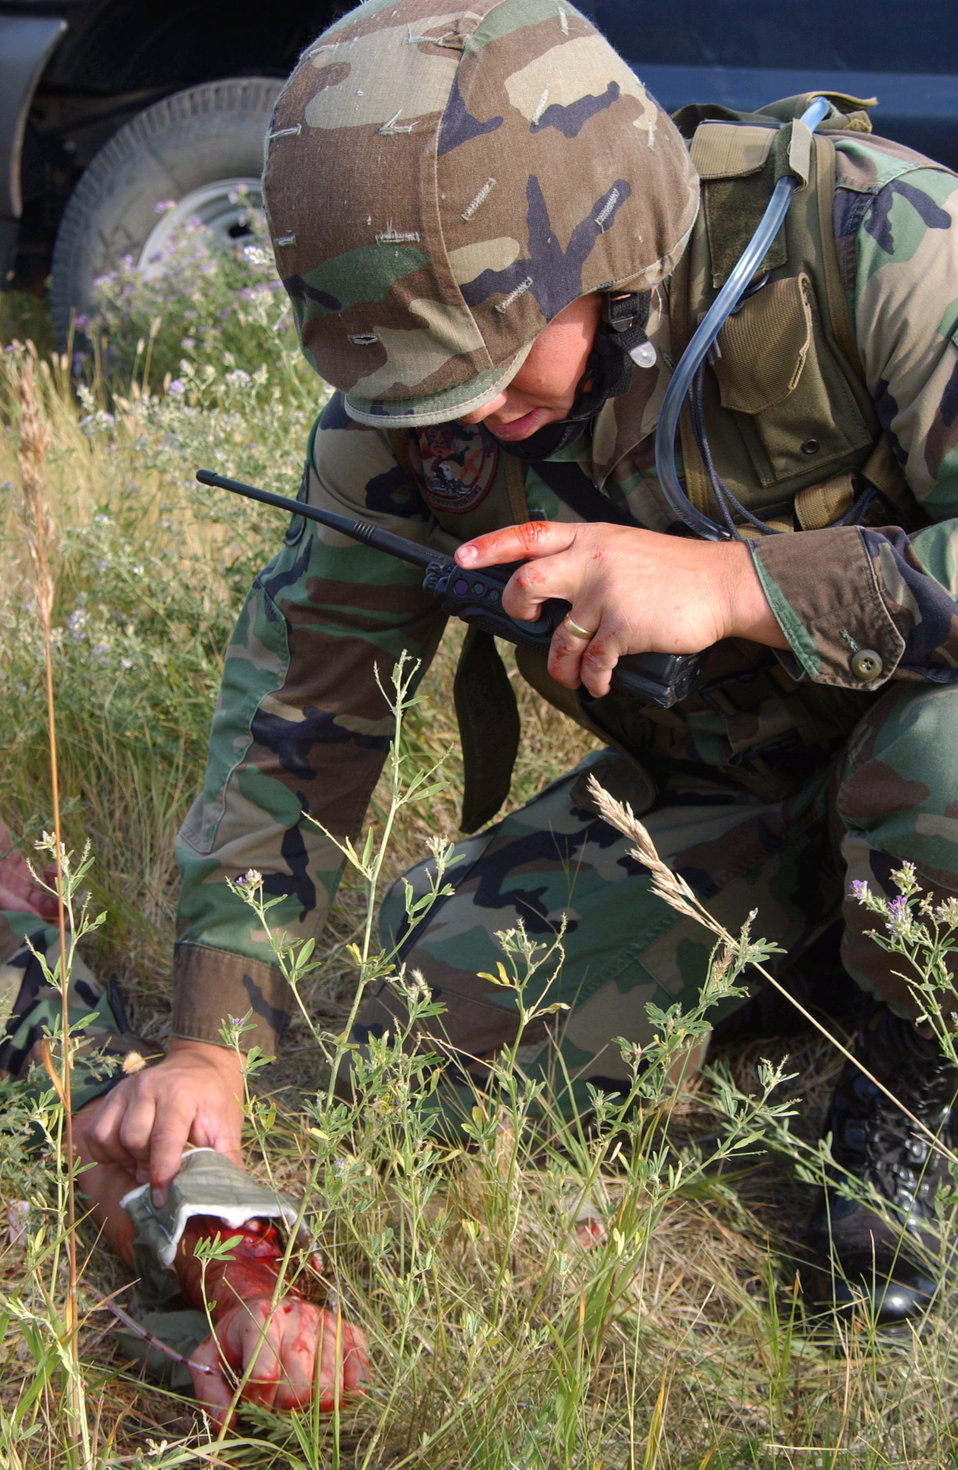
Tending to the injured

MALMSTROM AIR FORCE BASE, Mont. -- Staff Sgt. Joshua Garner tends to an injured Airman during a nuclear accident response exercise here July 29. Sergeant Garner is a security forces Airman with the 741st Missile Security Forces Squadron.